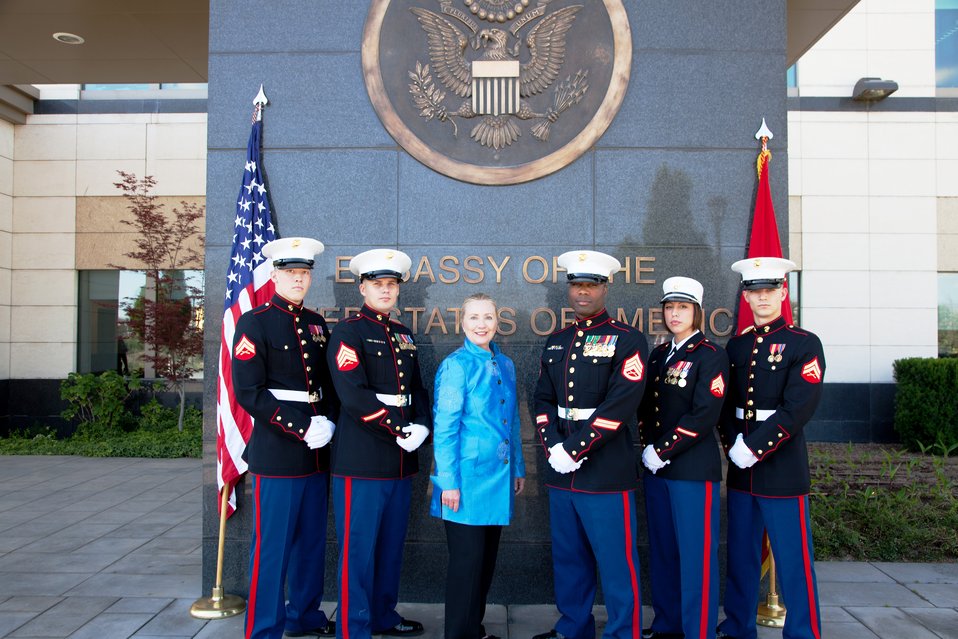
Secretary Clinton Meets With U.S. Marine Corps Guards

U.S. Secretary of State Hillary Rodham Clinton meets with U.S. Marine Corps Guards at the U.S. Embassy in Yerevan, Armenia, on June 4, 2012.